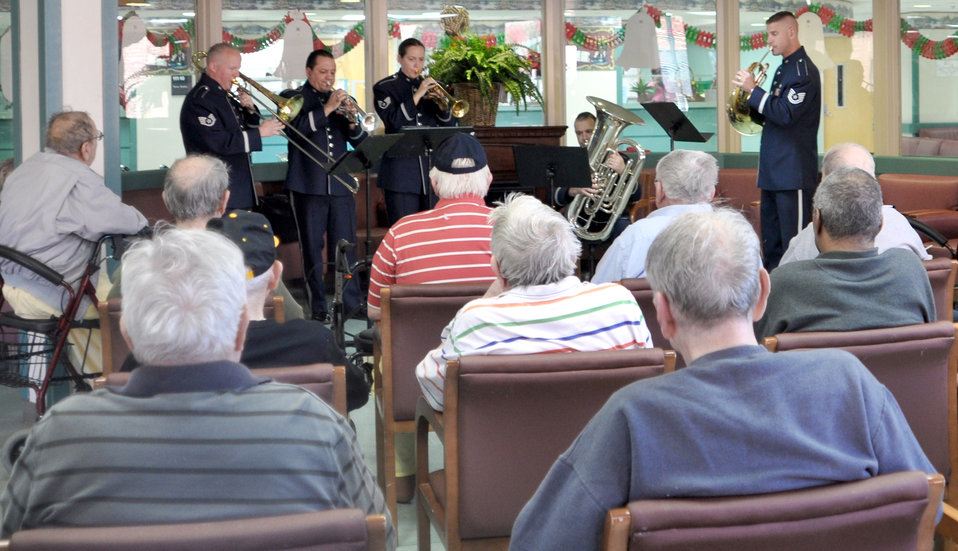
Reserve band brass quintet

The Band of the U.S. Air Force Reserve Brass Quintet performed for veterans at the Carl Vinson Veterans Administration Medical Center Dec. 13, 2010, in Dublin, Ga.